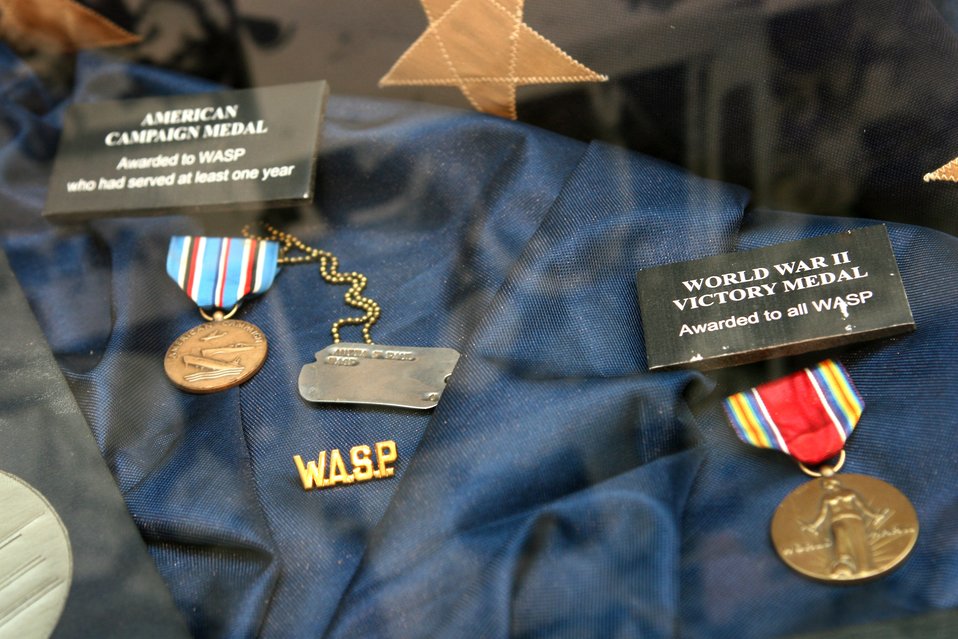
WASP exhibit opens in Arlington

Campaign medals awarded to World War II Women Airforce Service Pilots are on display as part of the